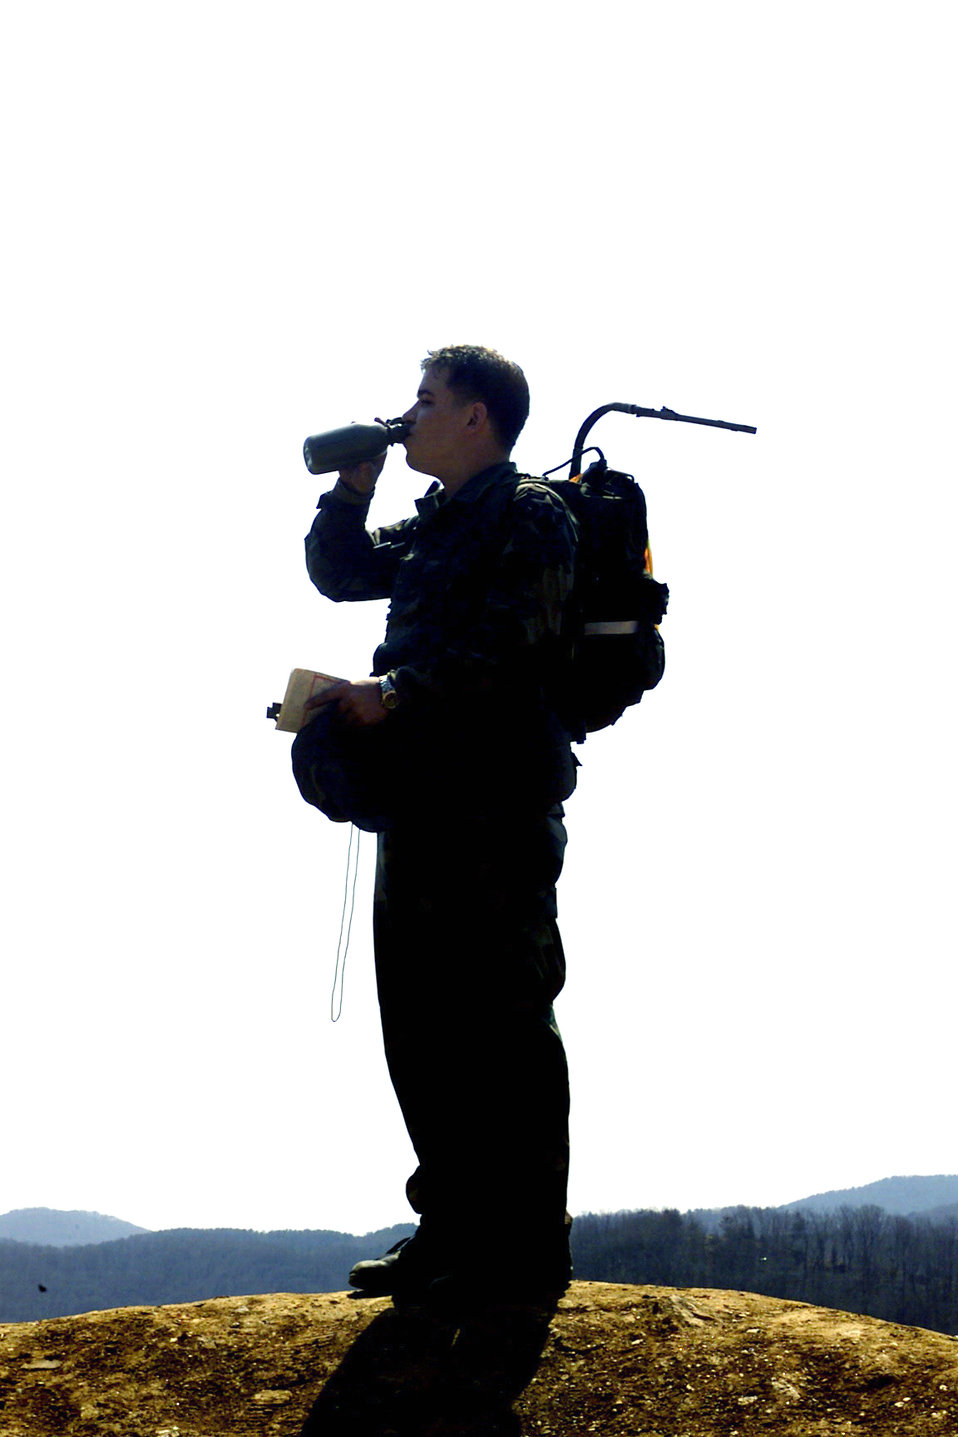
Tiger Challenge 2004

TWIN BRIDGES TRAINING AREA, South Korea -- Staff Sgt. Sean Kurdziolek rehydrates during the land navigation portion of Tiger Challenge 2004 here April 5. This weeklong annual competition tests tactical air control and command technicians on their navigation skills, job knowledge, physical endurance and marksmanship. Sergeant Kurdziolek is assigned to 604th Air Support Operations at Camp Casey, South Korea.